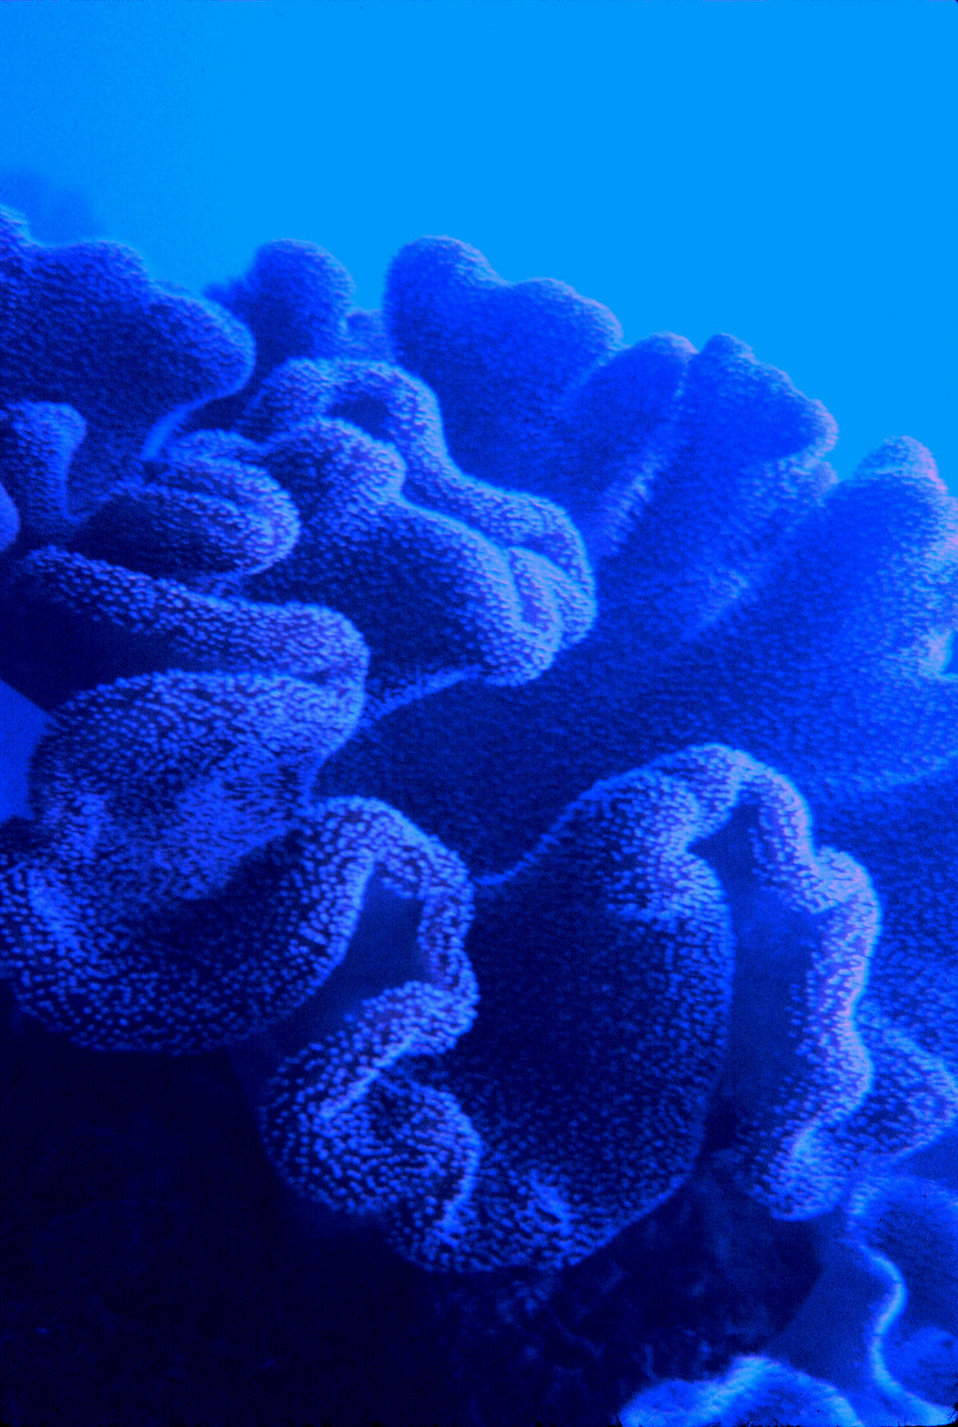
Feeding polyps on massive coral head (Pocillopora meandrina) - polyps are filter-feeders.